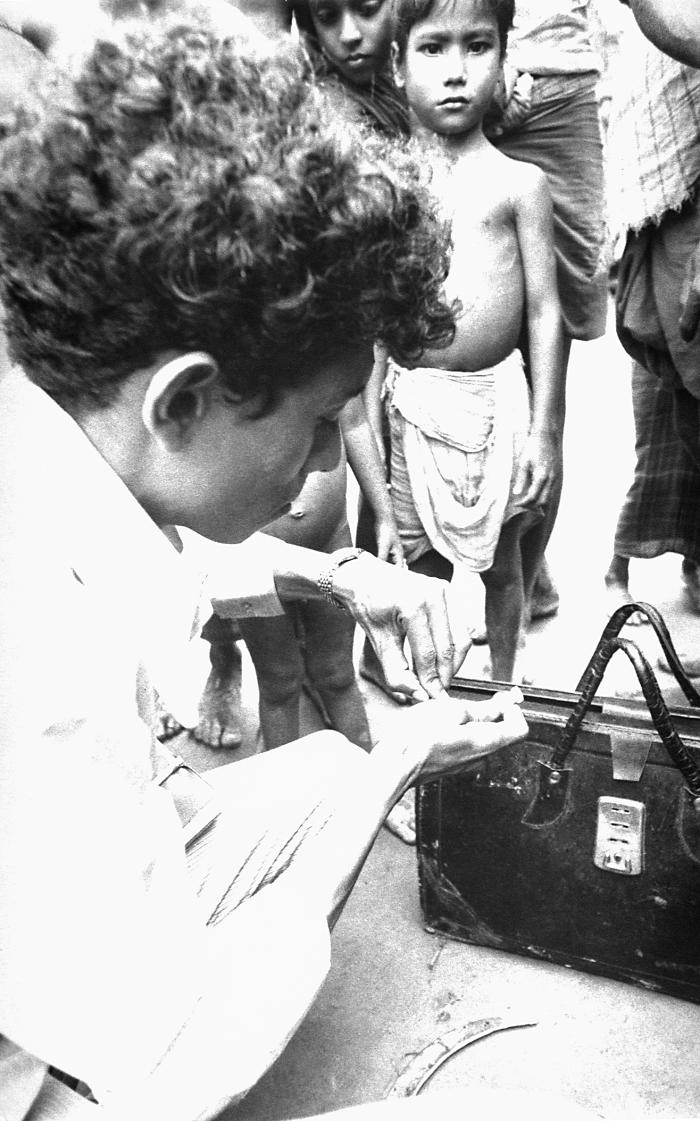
This community smallpox eradication team volunteer vaccinator was photographed as he was checking his vial of smallpox vaccine, while a small child watched from the background. Local residents, who became resident vaccinators, played a profound role in achieving a successful outcome to the eradication program. As locals, they were viewed as familiar, and trusted, and spoke the local dialect, thereby, facilitating enhanced communication with fellow inhabitants. Also integral to the success of the eradication campaign, was getting the word out to those who were unaware of the disease's symptoms, and how to prevent its attack on those who had not yet been vaccinated, which included showing a picture of a child who displayed the characteristic smallpox maculopapular rash.